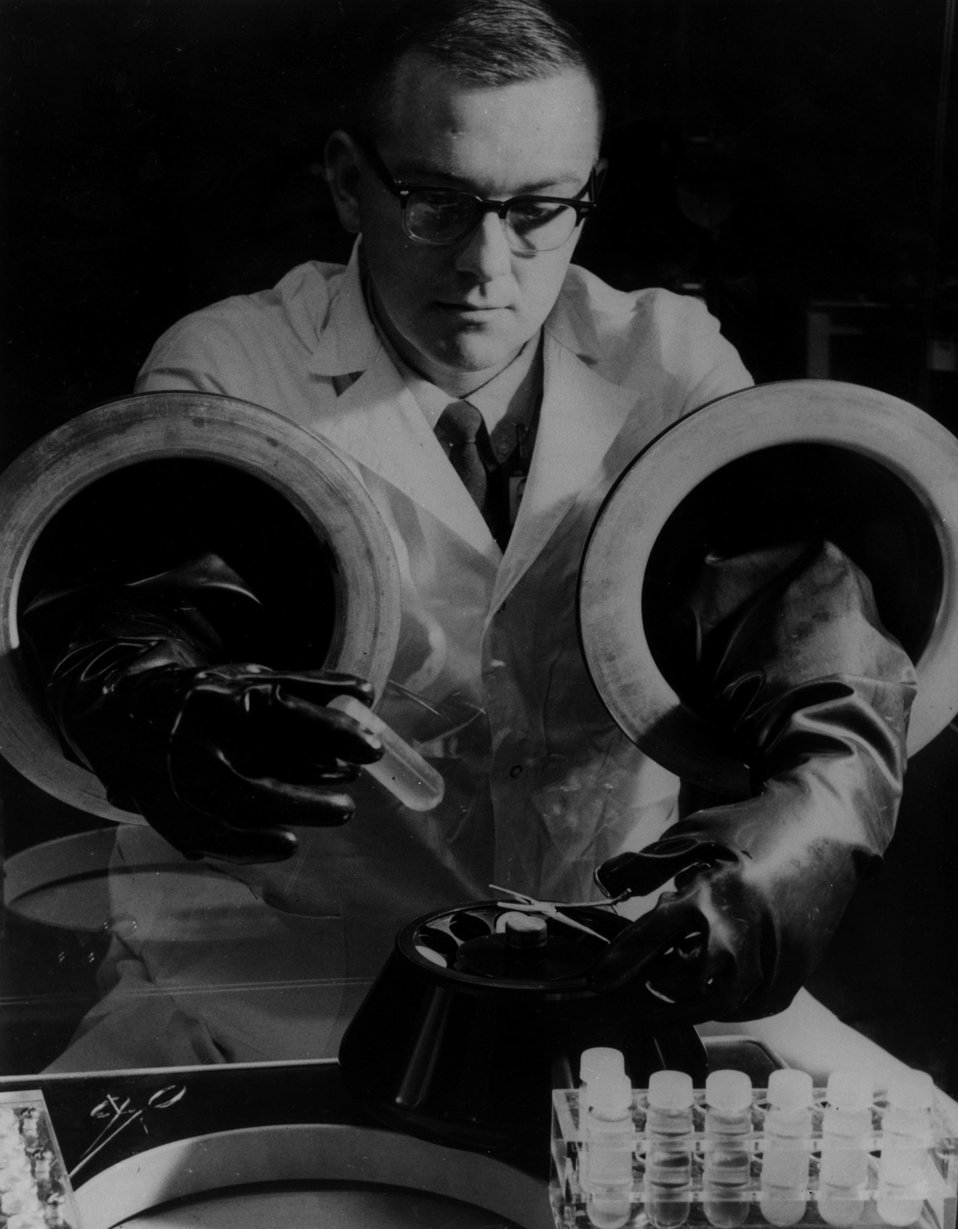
A biologist prepares anti-cold vaccines for experimentation in a virus isolation facility at the Oak Ridge Gaseous Diffusion Plant. c. 1966